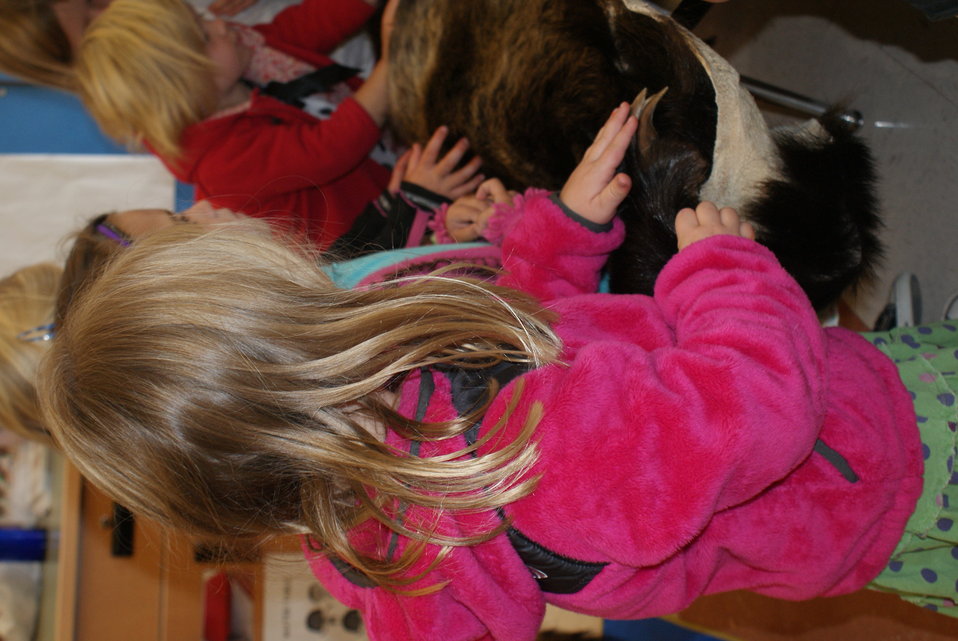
Scientists in the Community Program

U.S. Fish and Wildlife Service Mountain-Prairie Region Deputy ARD for External Affairs, Matt Kales, introduces early childhood education students at William Roberts Elementary School in Denver to some of Colorado's native and historic wildlife species.